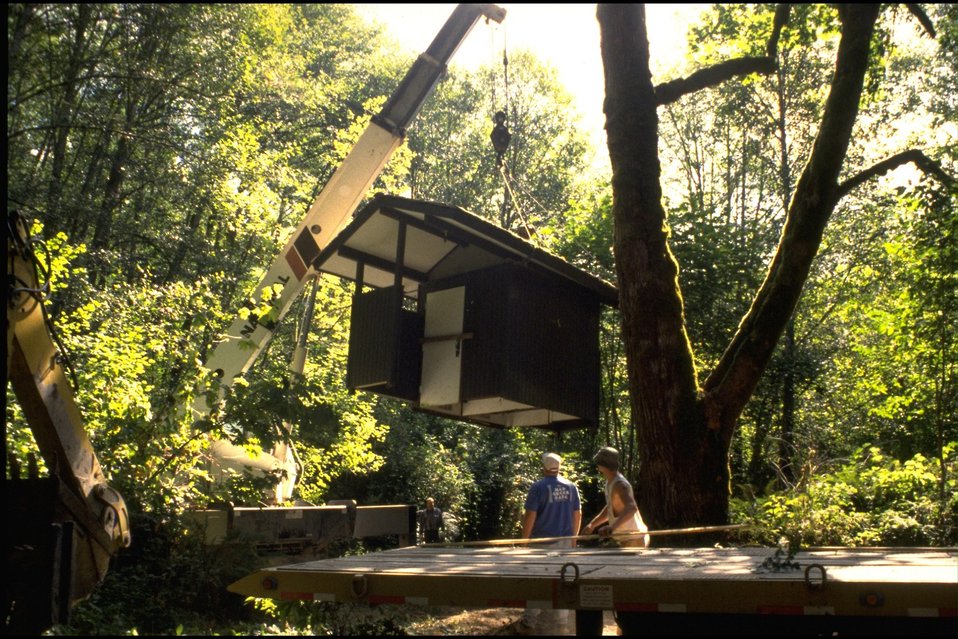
Taking out an old trailer and putting in a new CXT at Whittaker Creek.